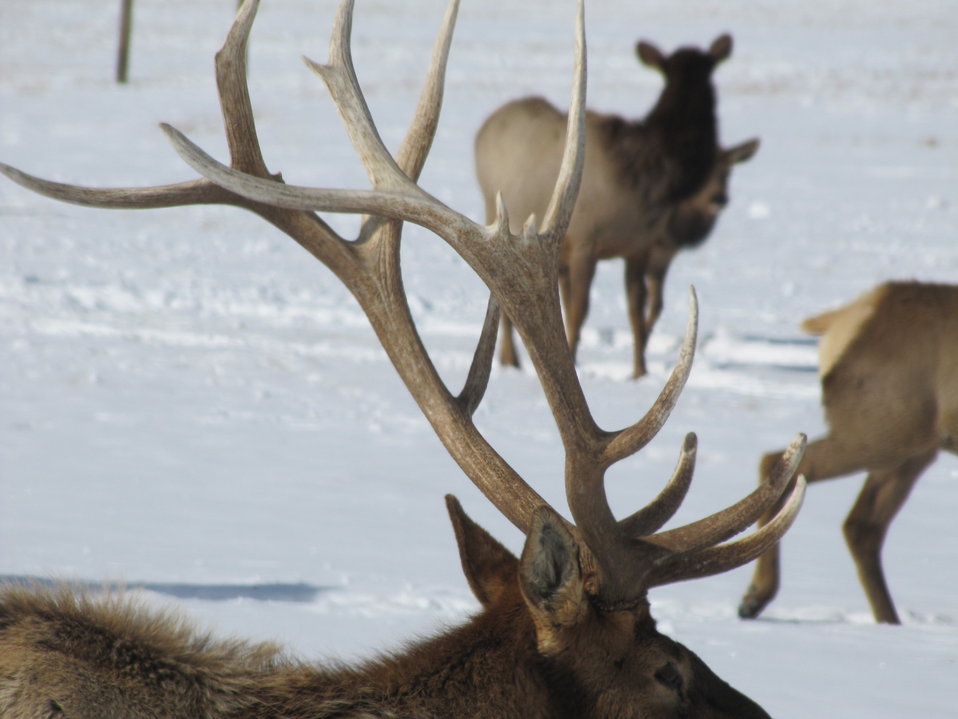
Two Small Points

This bull's antlers are unique because of the two small points developing between the larger tines.